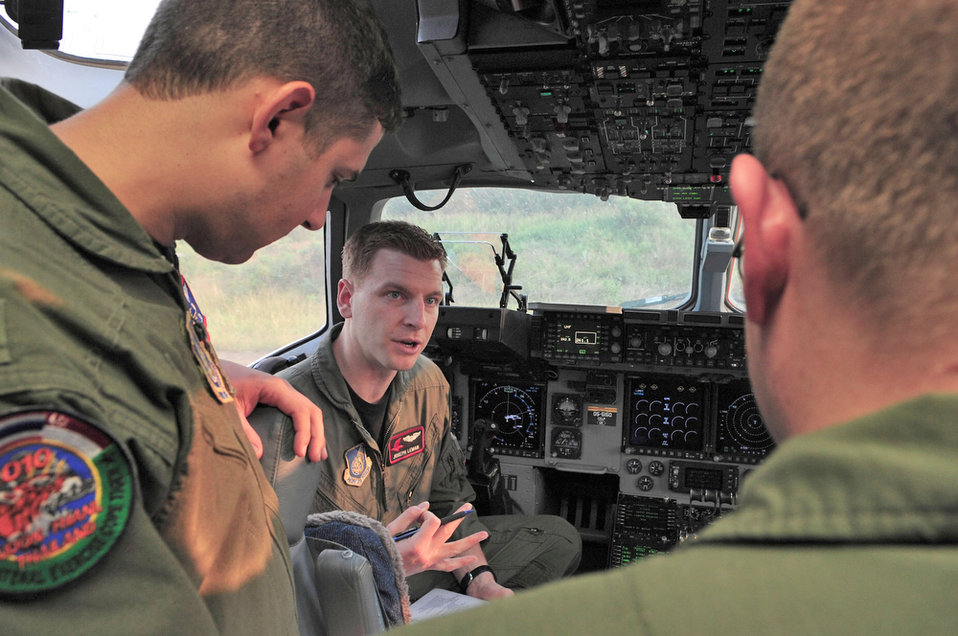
Multi-aircraft mission provides key training in Thailand

Capt. Joseph Leman (center) reviews the day's mission with fellow crew members March 8, 2010, before departing Udon Thani Royal Thai Air Force Base, Thailand, for a three-ship formation airdrop. Captain Leman is deployed to Cope Tiger 2010 from the 517th Airlift Squadron at Elmendorf Air Force Base, Alaska.